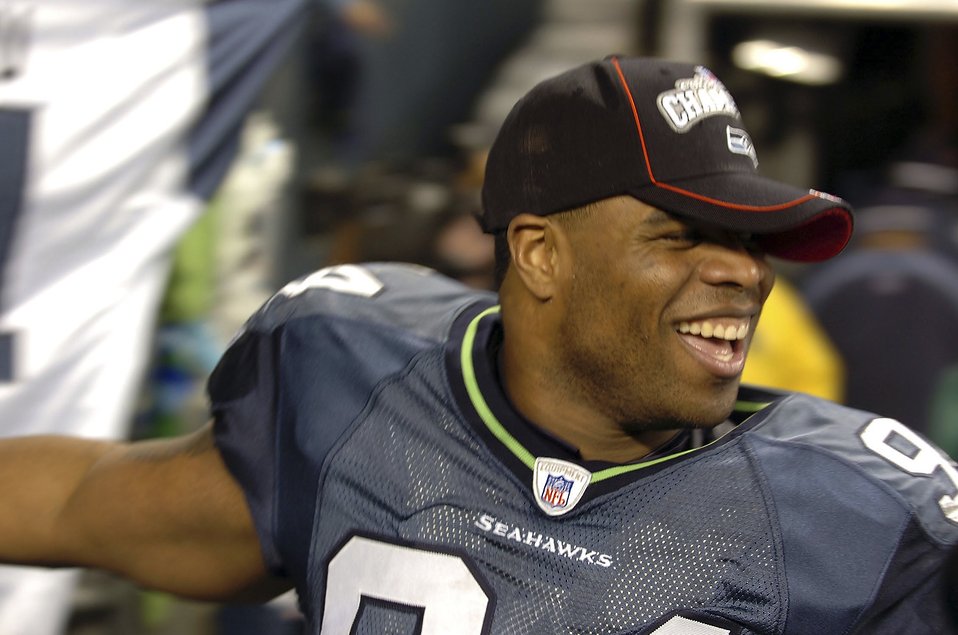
Tackling Guardsman

SEATTLE (AFPN) -- Starting defensive end Bryce Fisher sports a championship cap and a big smile after the Seattle Seahawks punched their tickets to Super Bowl XL by defeating the Carolina Panthers, 34-14, in Seattle on Jan. 22. When he's not playing defensive end, No. 94 is a captain and a public affairs officer in the Washington Air National Guard.